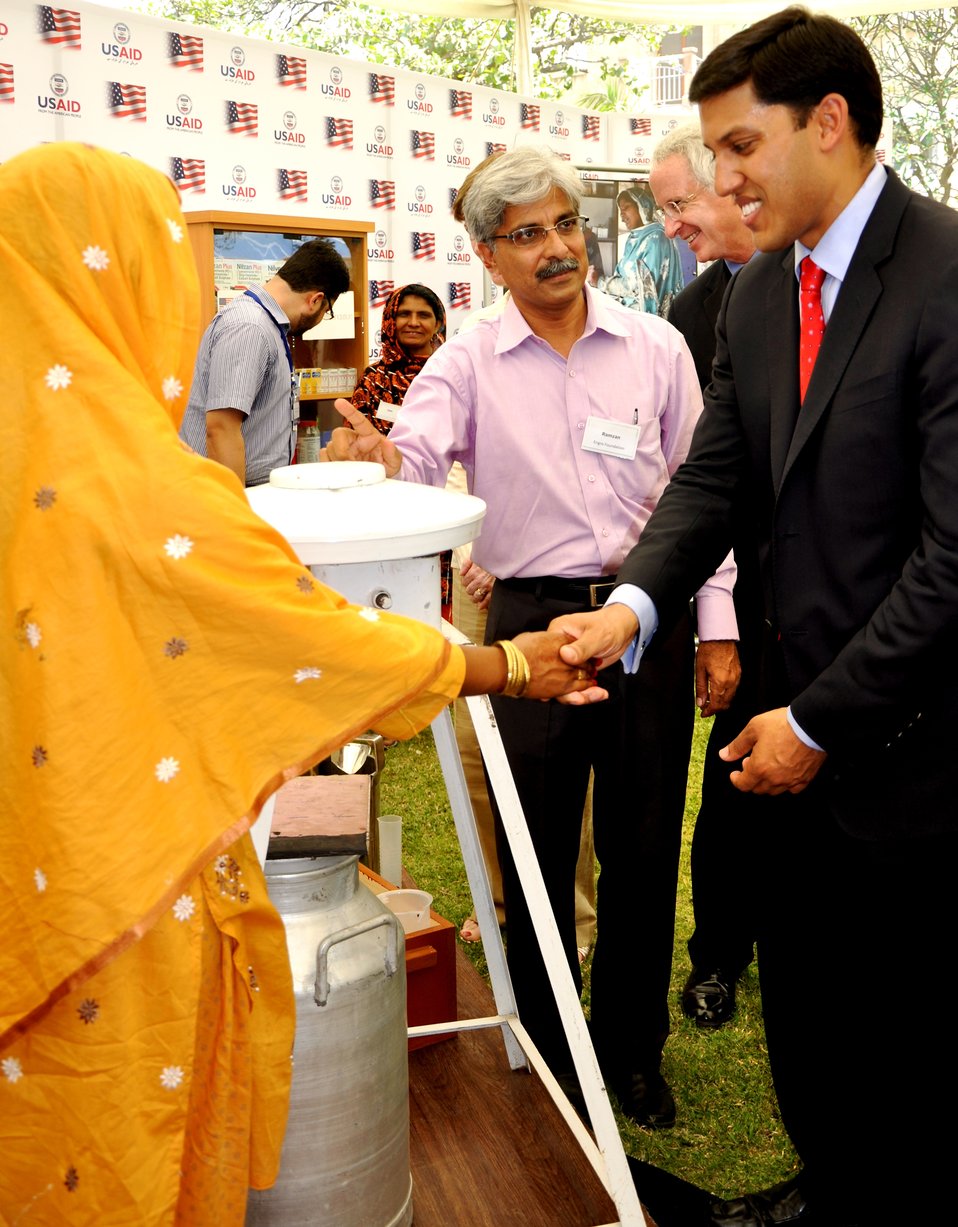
Dr. Rajiv Shah visiting Entrepreneurs project stalls